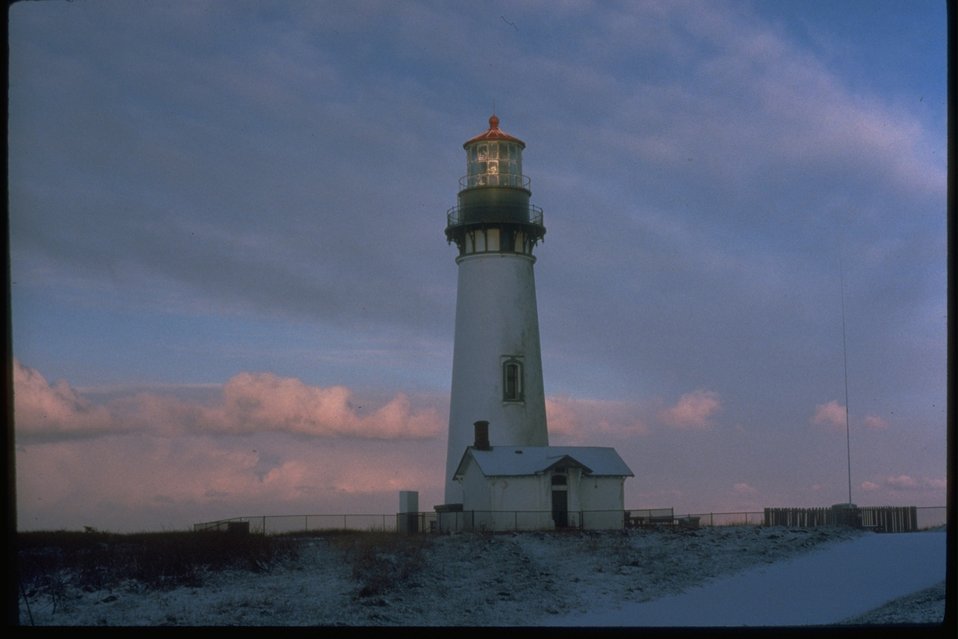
Snow at the Yaquina Head lighthouse.